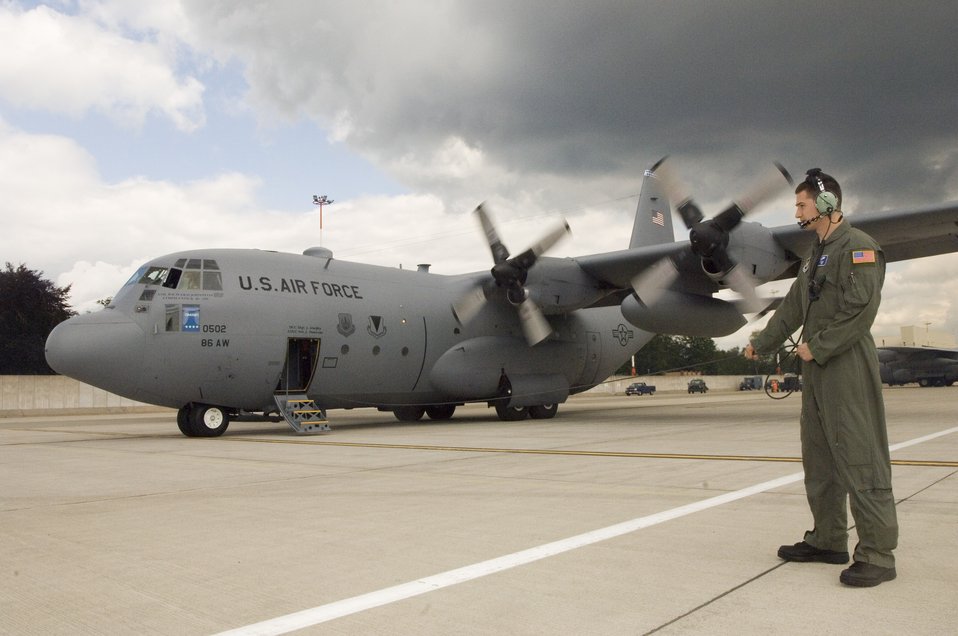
C-130 mission in Germany

Airman 1st Class Michael Wilson waits for passengers to board a C-130 Hercules at Ramstein Air Base on Monday, June 5, 2006, for the day's mission to Stuttgart and Grafenwoehr, Germany. Airman Wilson is a loadmaster with the 37th Airlift Squadron at Ramstein.